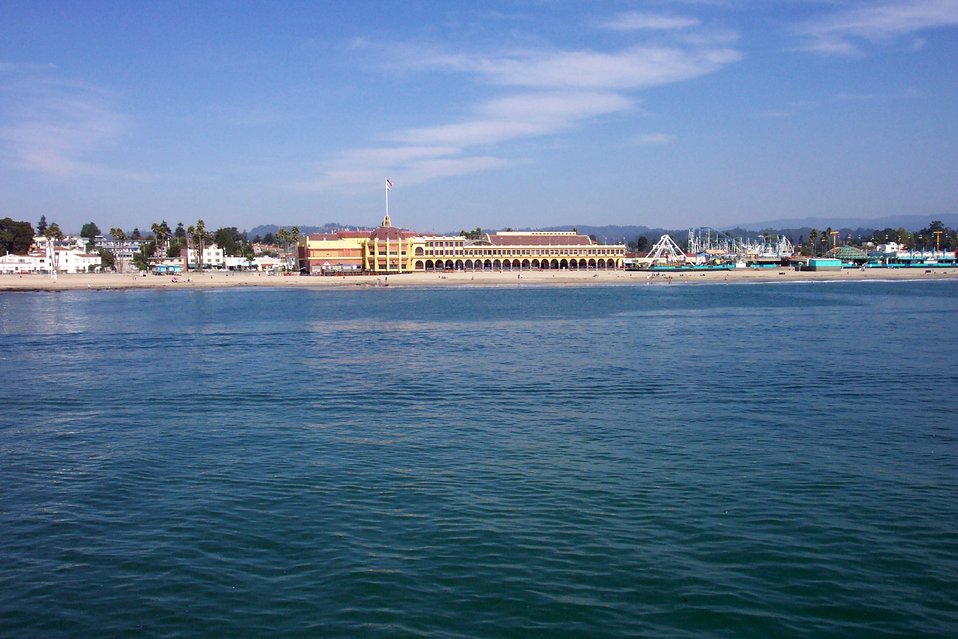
Coconut Grove and the Santa Cruz Boardwalk as seen from the Santa Cruz wharf.